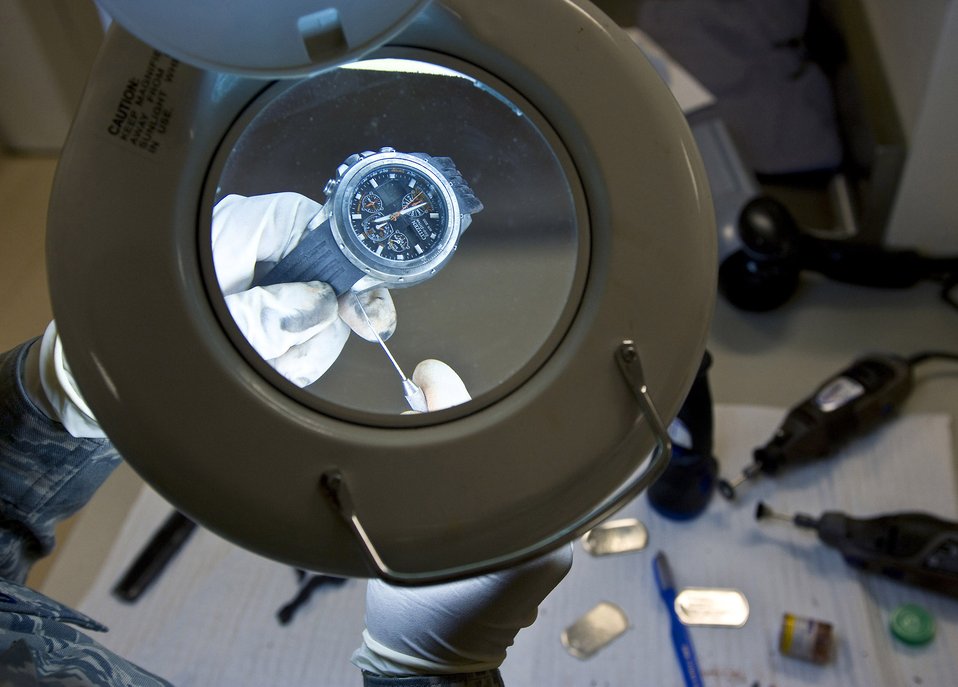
Dignified Transfer

Tech. Sgt. Latersa Frazier, a personal effects supervisor in the Air Force Mortuary Affairs Operations Center at Dover Air Force Base, Del., polishes a watch April 1 to demonstrate the cleaning process used on personal effects during preparation of remains, part of the dignified transfer process. The personal effects office prepares and cleans all items to be returned to the families of fallen heroes. Sergeant Frazier is deployed from the 43rd Force Support Squadron at Pope Air Force Base, N.C.